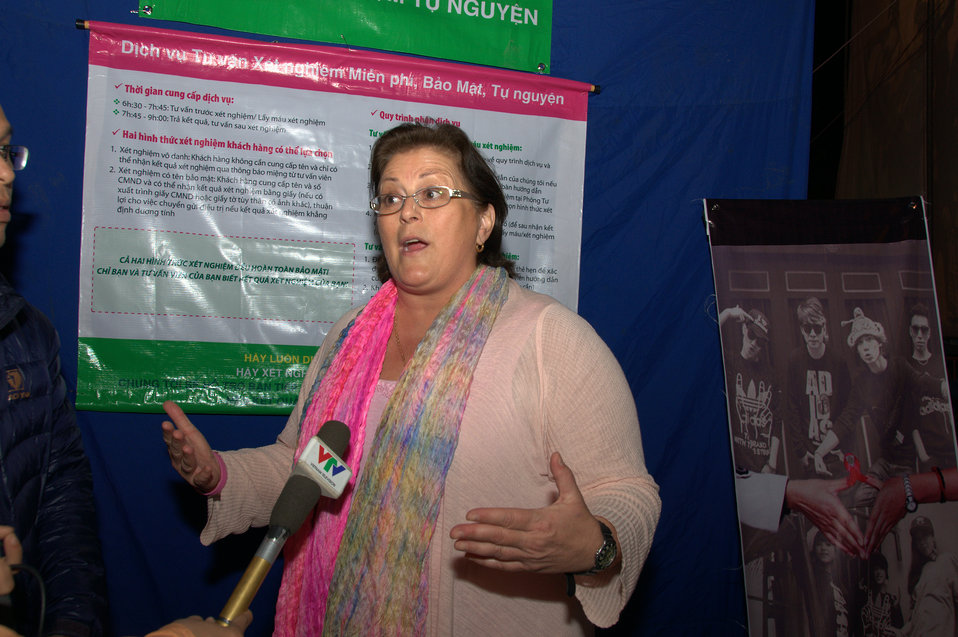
U.S. Embassy Deputy Chief of Mission Claire Pierangelo speaks at the opening of the photo exhibit in Hanoi.

U.S. Embassy Deputy Chief of Mission Claire Pierangelo joins an interview with Vietnam Television.

Hanoi, December 18, 2012.